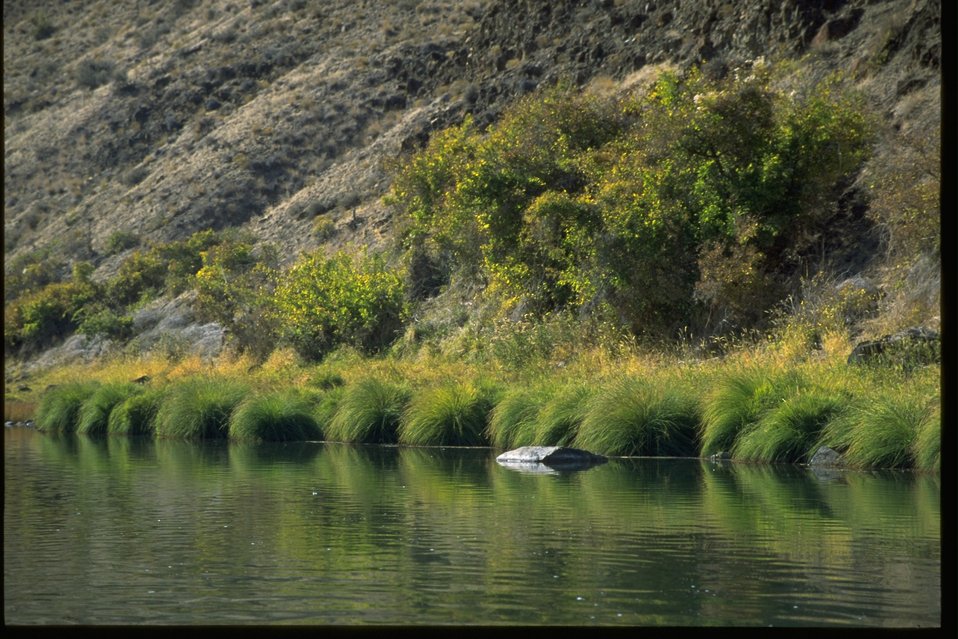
Riparian vegetation along the John Day River.